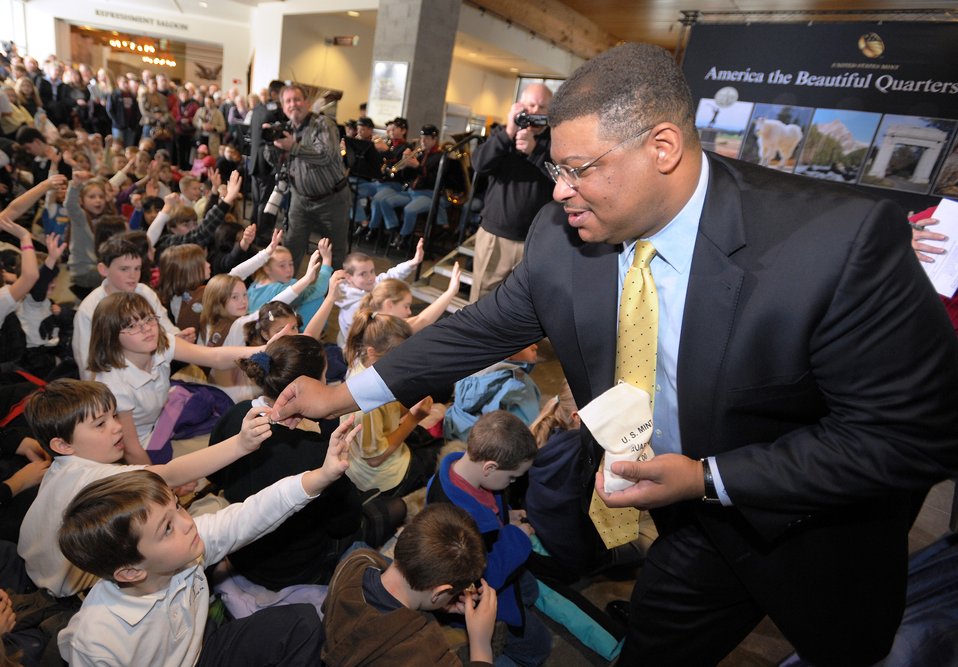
Gettysburg National Military Park Quarter Launch

B.B. Craig, United States Mint Associate Director of Sales and Marketing, hands out brand new Gettysburg National Military Park quarters to attendees of the coin launch event January 25 in Gettysburg, PA.